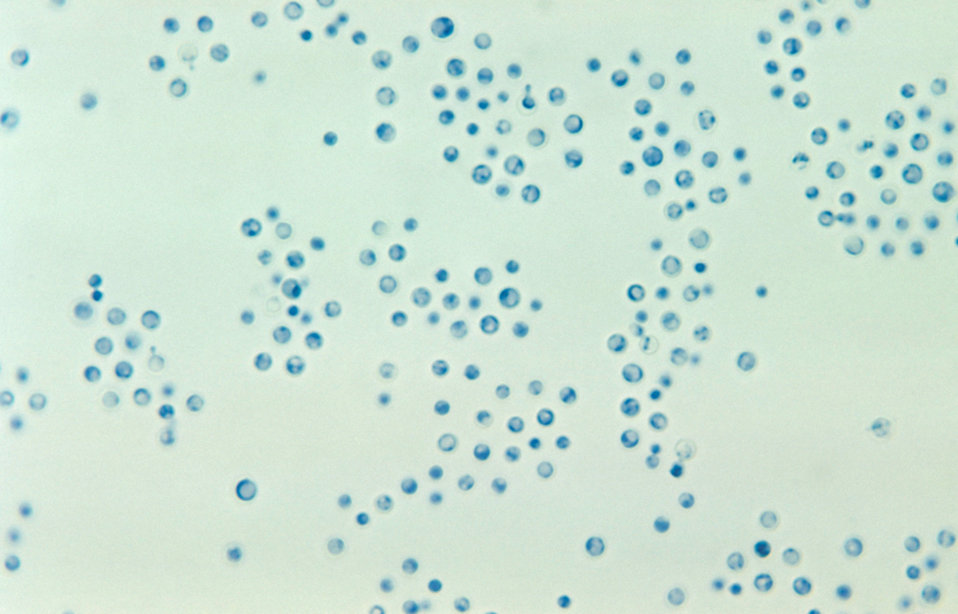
This photomicrograph depicts the encapsulated yeast Cryptococcus neoformans.